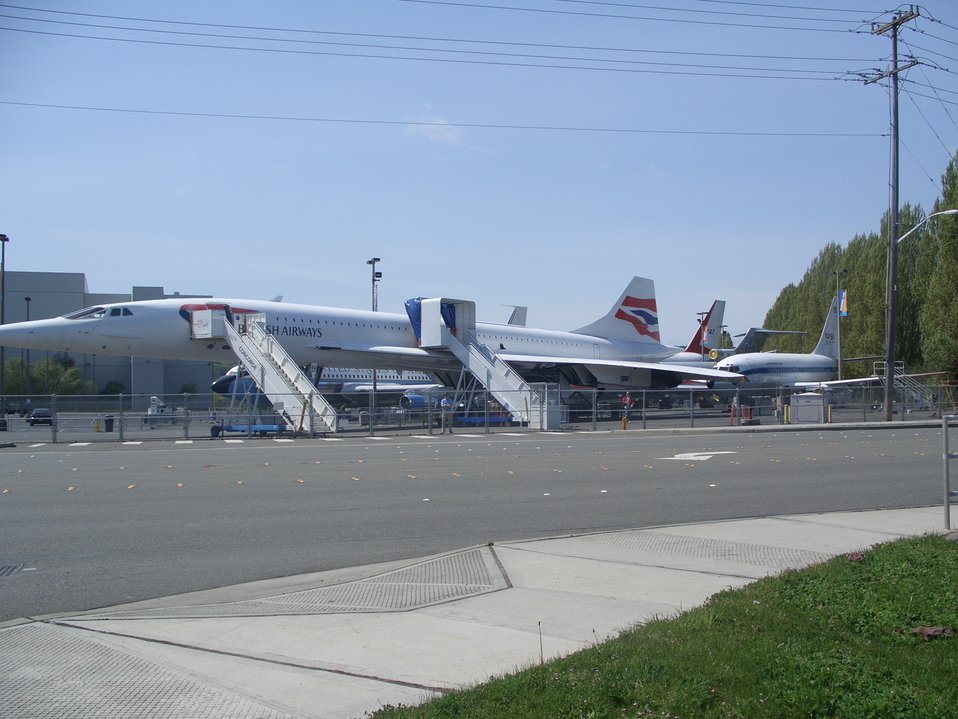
Concorde on Museum of Flight, Seattle.